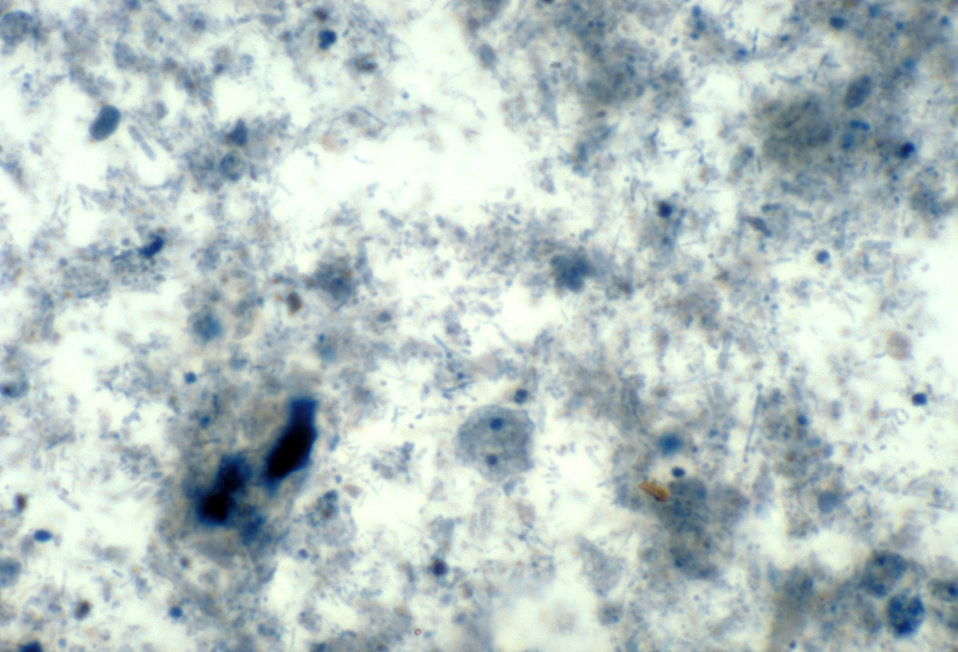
This iron-hematoxylin stained photomicrograph depicts a binucleated amoebic trophozoite of a Dientamoeba fragilis parasite.